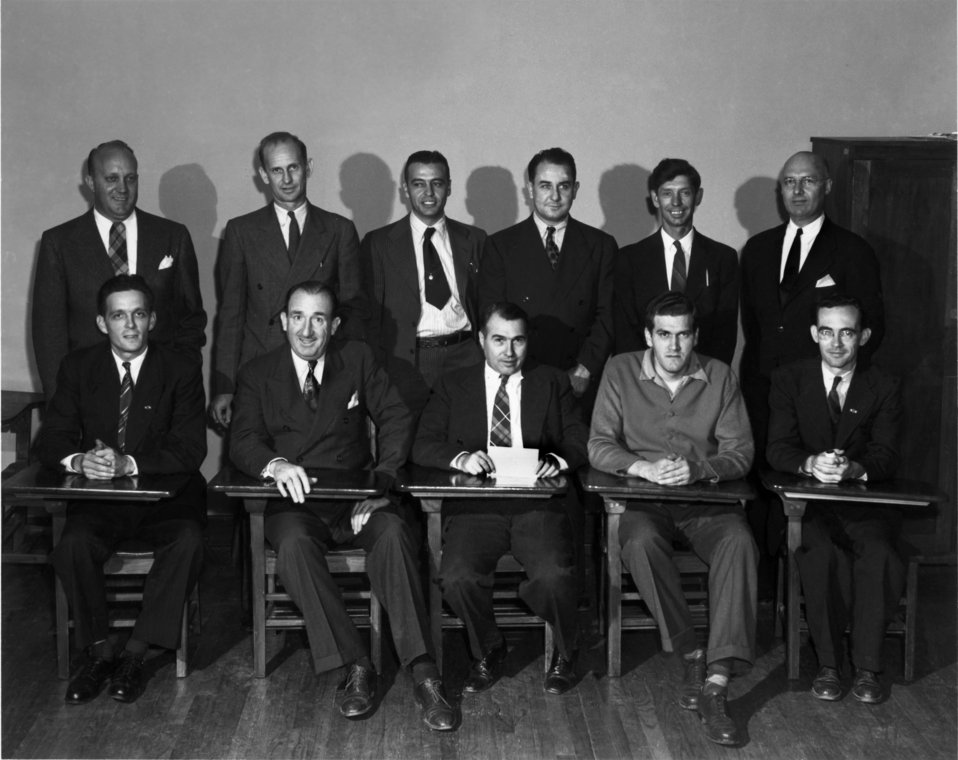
Town Council Oak Ridge

1189 DOE photo Ed Westcott 9/10/1945
Oak Ridge Tennessee